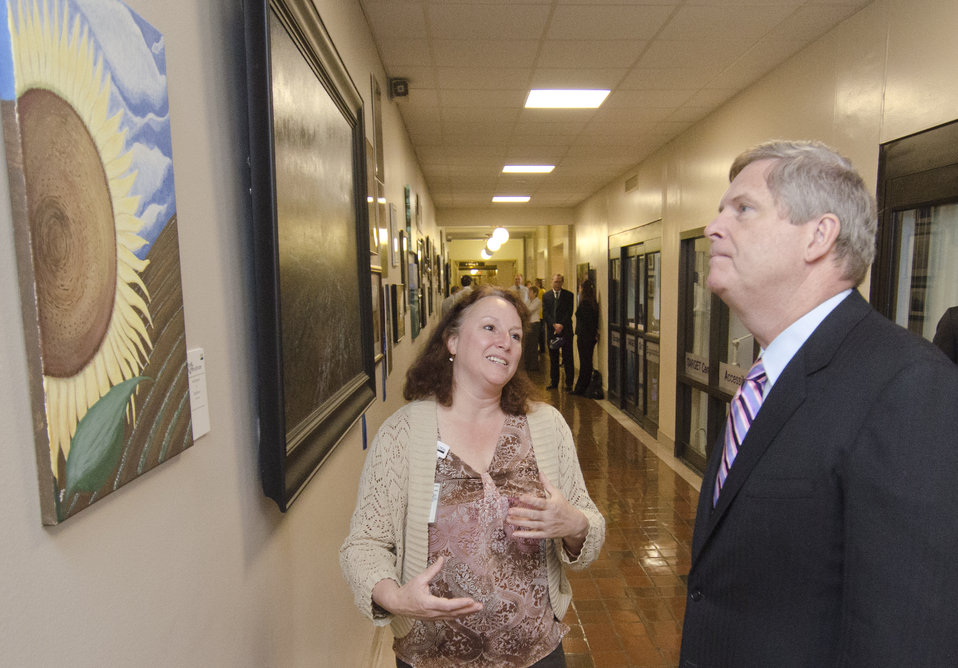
Judith Ragonesi discusses her artwork with Agriculture Secretary Tom Vilsack during his visit to the gallery of winning entries and some of the employee artists from the inaugural competition for Art and Agriculture, Thursday, May 31, 2012, in the South Building, Washington, D.C. U.S. Department of Agriculture (USDA) full-time and part-time employees submitted art based on ten agricultural themes. The event was part of USDA's 150th Anniversary celebration and the winning artwork is on display from May 15 through December 31, 2012. Artistic expression is a creative outlet that is vital for an individual to grow and develop in their environment.